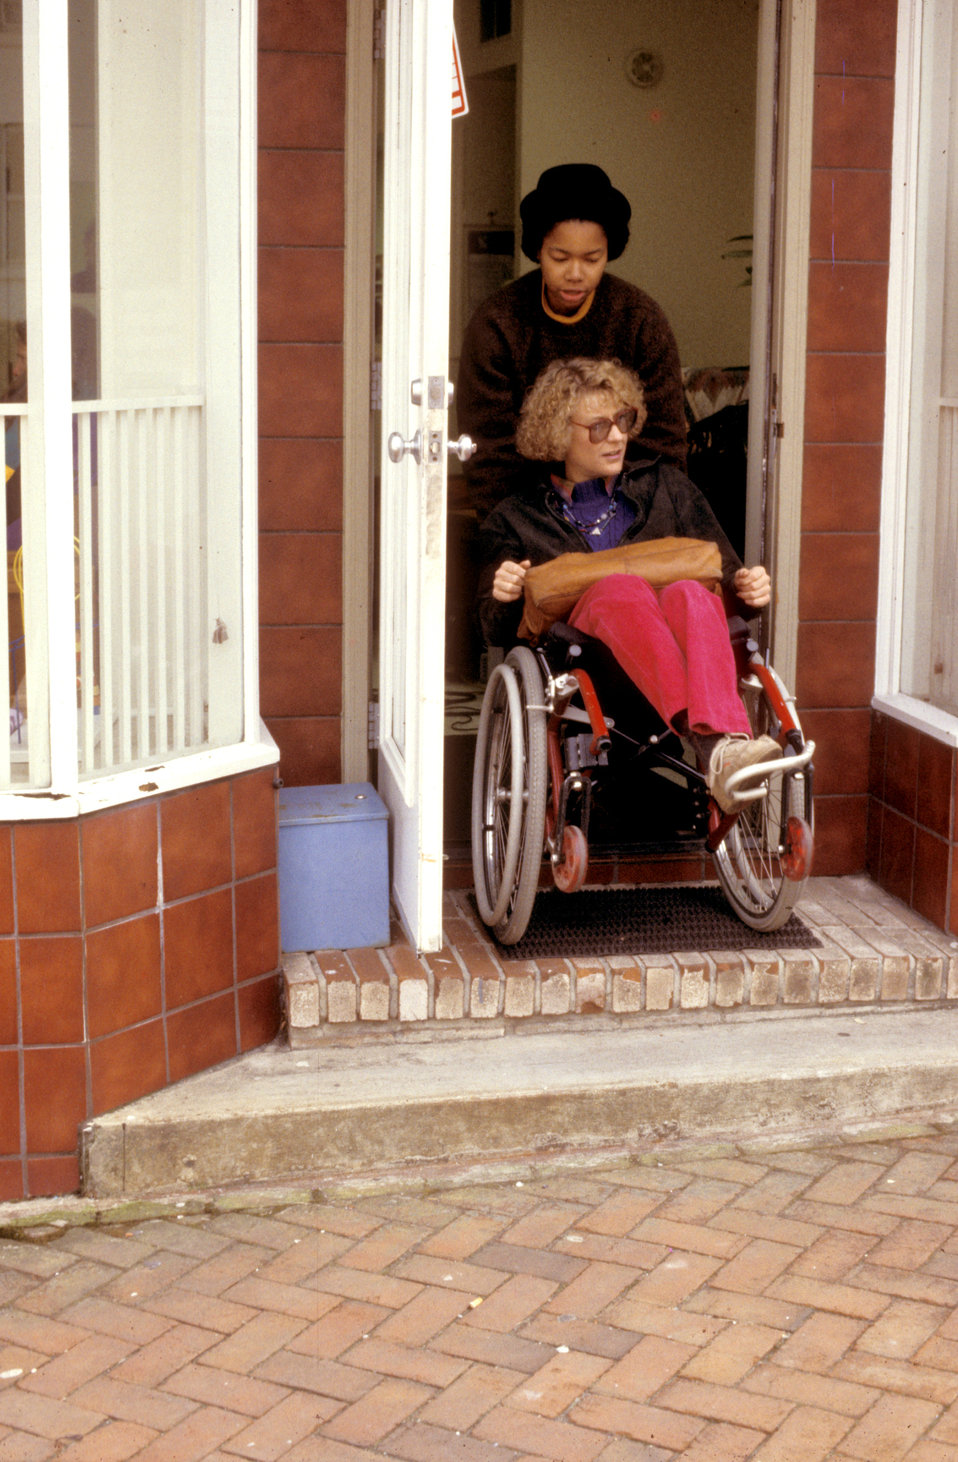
In this 1993 image, the front of a women's clinic revealed a front door that was accessed via a two-step stoop, which made accessibility an issue for individuals having problems with mobility, such as the wheelchair-seated woman seen here, as she was assisted with exiting the facility. In PHIL 9022 - 9026, a temporary plywood ramp had been installed. Even though the temporary ramp installation made access easier for the mobility-challenged, it was constructed in such a way as to make it a dangerous, though short-term solution. PHIL images 9027 - 9029 depicted a long-term, permanent solution using a brick, concrete, and metal ramp. It was not the perfect solution, for it lacked adequate maneuvering room near the clinic doorway. It also clearly appeared as an add-on, or after-the-fact solution that protruded into the wide sidewalk, while attempting to blend in with the existing buildings by using brick, colored concrete, and wrought iron rails. Stairs had also been provided.